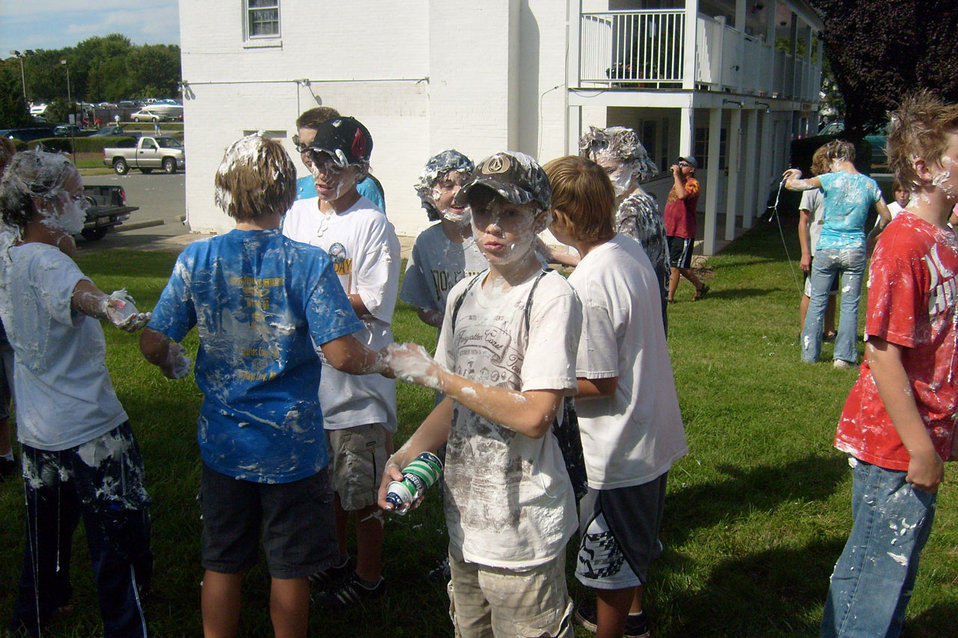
Shave cream

Shaving cream fight.